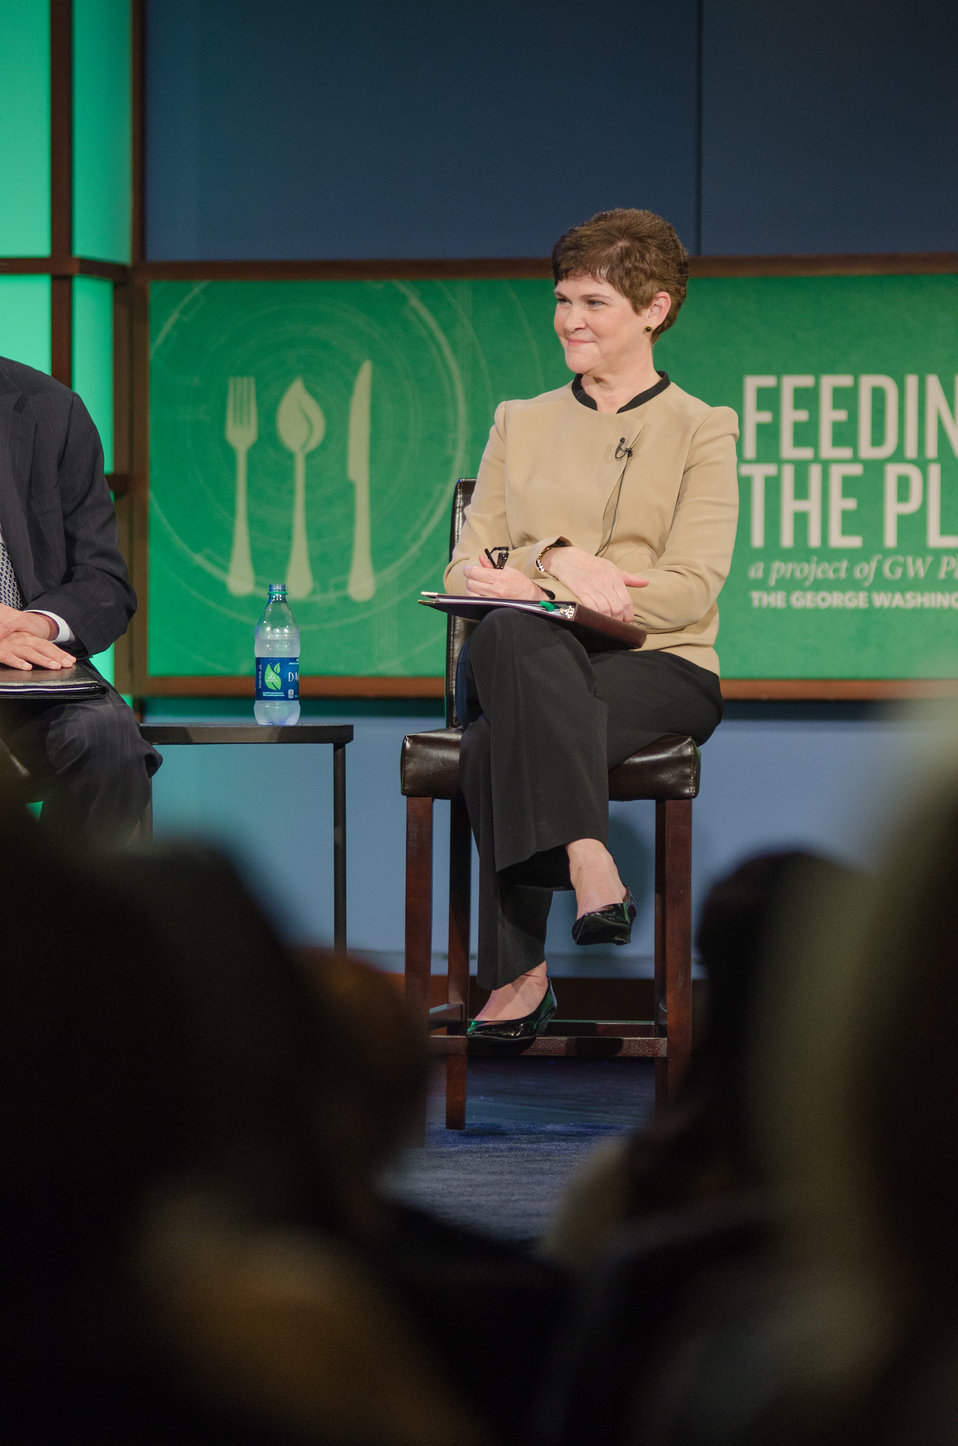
Krysta Harden, Deputy Secretary of Agriculture sits on the discussion panel “Policy, Palate, and the Plate-Innovation and how policy can impact practice at the Feeding the Planet Summit of leaders from agriculture, business, finance, academia, Non Governmental Organization, government and media, along with a large contingent of college students to engage around promising innovations in global agriculture and food security. The Summit spotlights transformation and scalable developments in policy, practices and technologies with special attention to related issues of gender, climate change and urbanization at The George Washington University in Washington, DC, on Wednesday, Oct. 31, 2013.